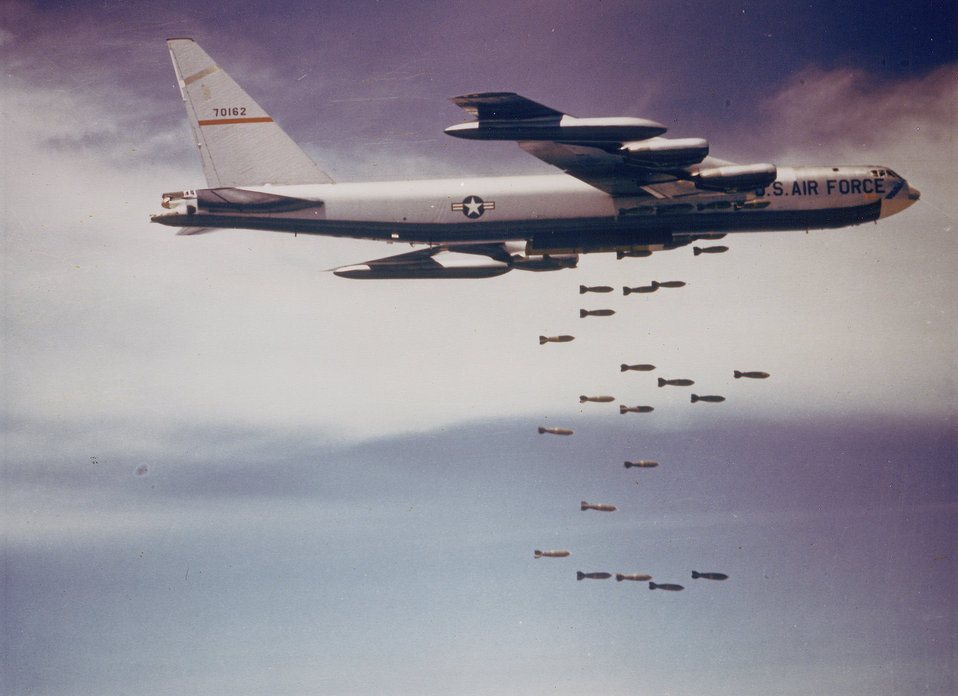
B-52 Stratofortress

1960's -- B-52 Stratofortress dropping bombs in the 1960's.